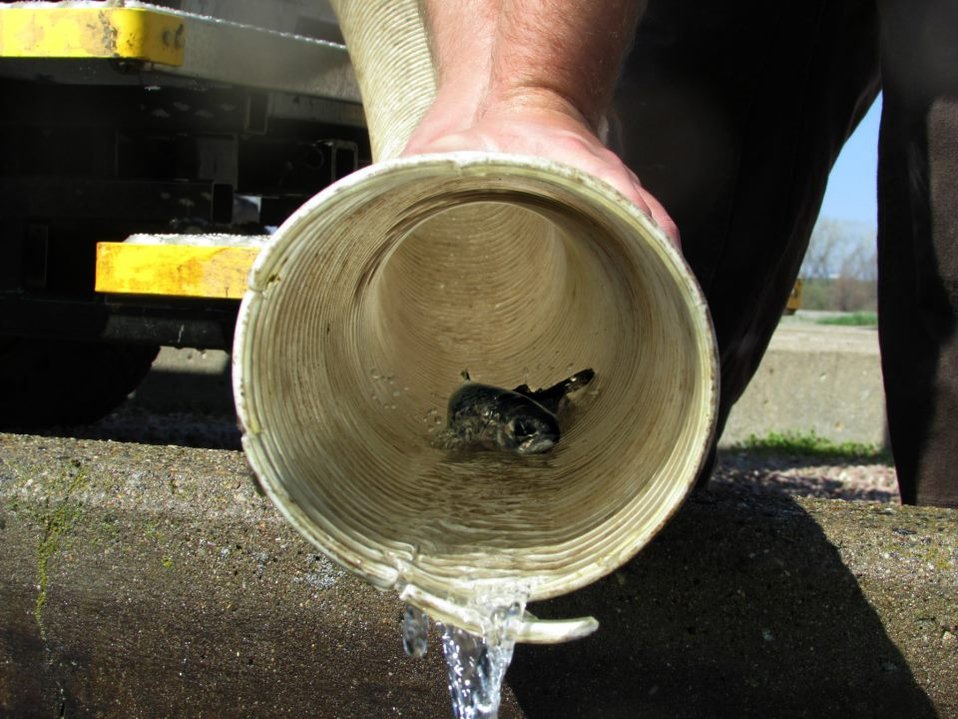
Trout Slide

Our trout go through a crazy transition stage when they are released into a new area. Here is what they see coming down the pickup tube and into a new raceway.